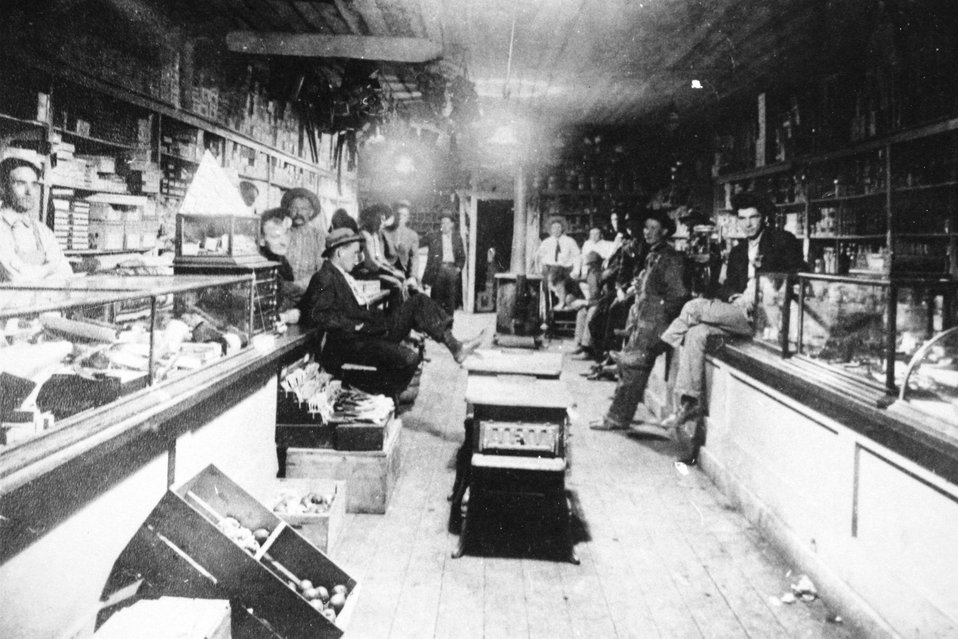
Inside of the Barlow Brothers Store